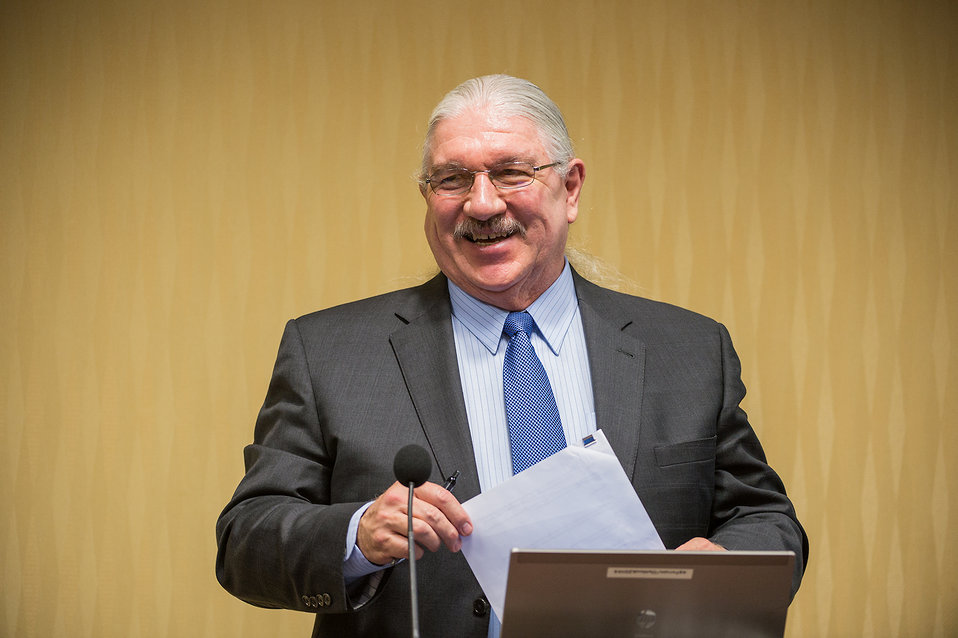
U.S. Department of Agriculture (USA) Deputy Under Secretary for Natural Resources and Environment (NRE) Arthur “Butch” Blazer moderating a panel on forest health at the 2014 Agricultural Outlook Forum on Friday, Feb. 21, 2014 in Arlington, VA.